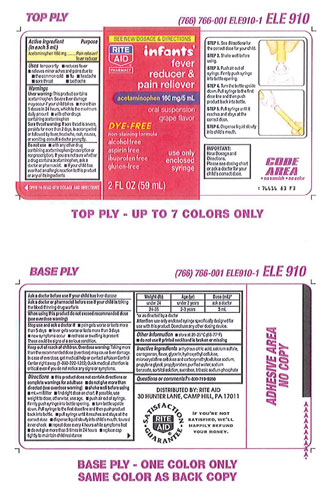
Recalled - Acetaminophen infant suspension liquid

November 1, 2013 – Product Recall – Perrigo Initiates Nationwide Voluntary Product Recall of Acetaminophen Infant Suspension Liquid, 160 Mg/5 Ml, Due to a Potential Defect with the Co-packaged Oral Syringe.